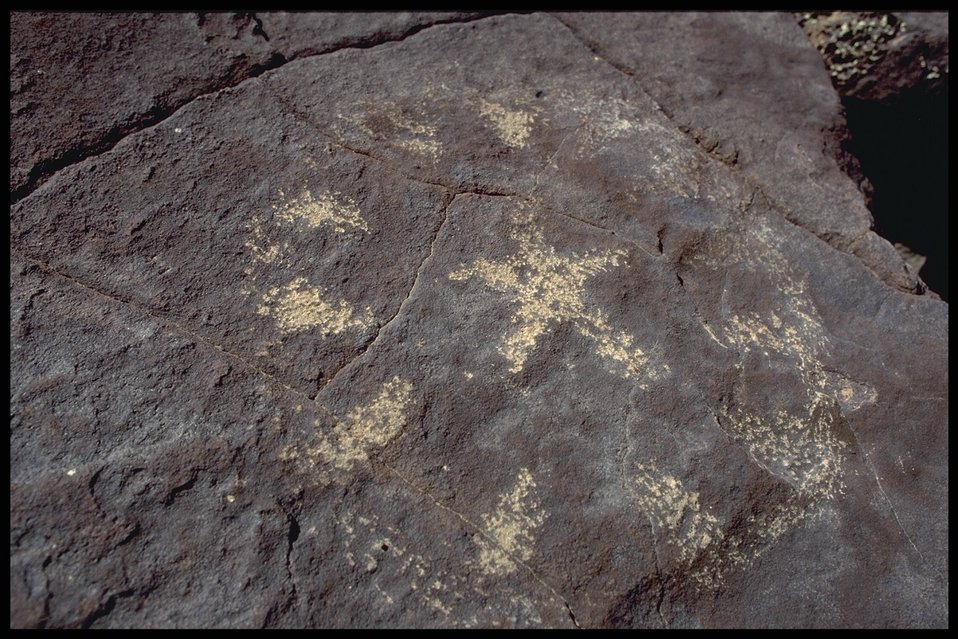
Petroglphs (Rock Art) can be found throughout the 71,000 Acres that make up the Agua Fria National Monument.